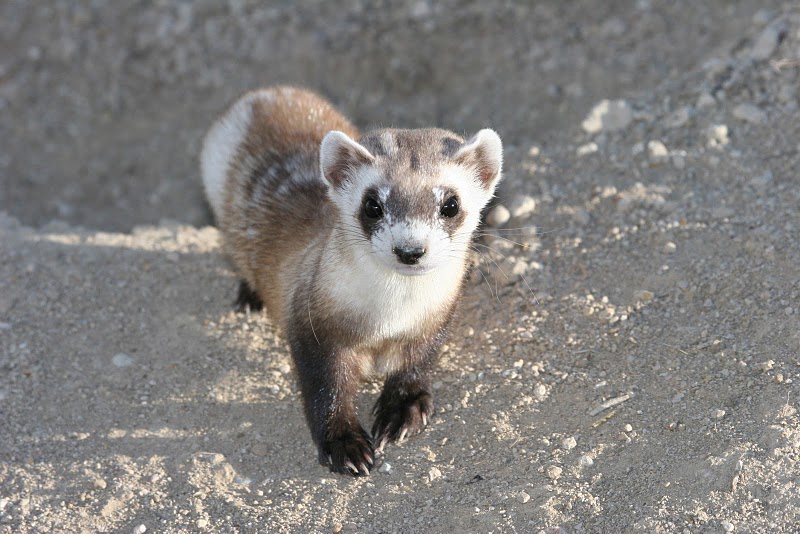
Black-footed Ferret